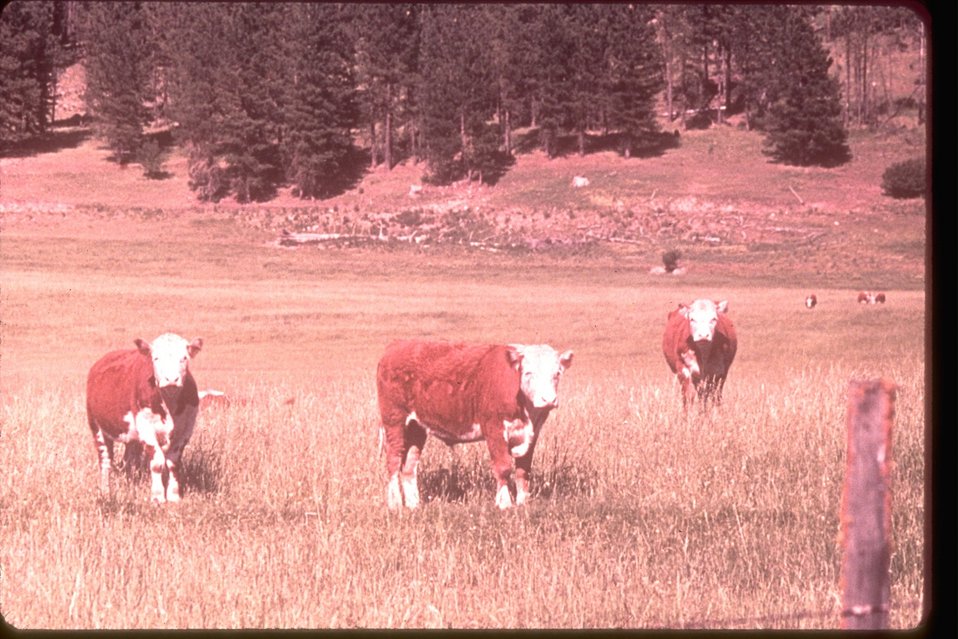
Cattle grazing showing progress in WSA inventory.